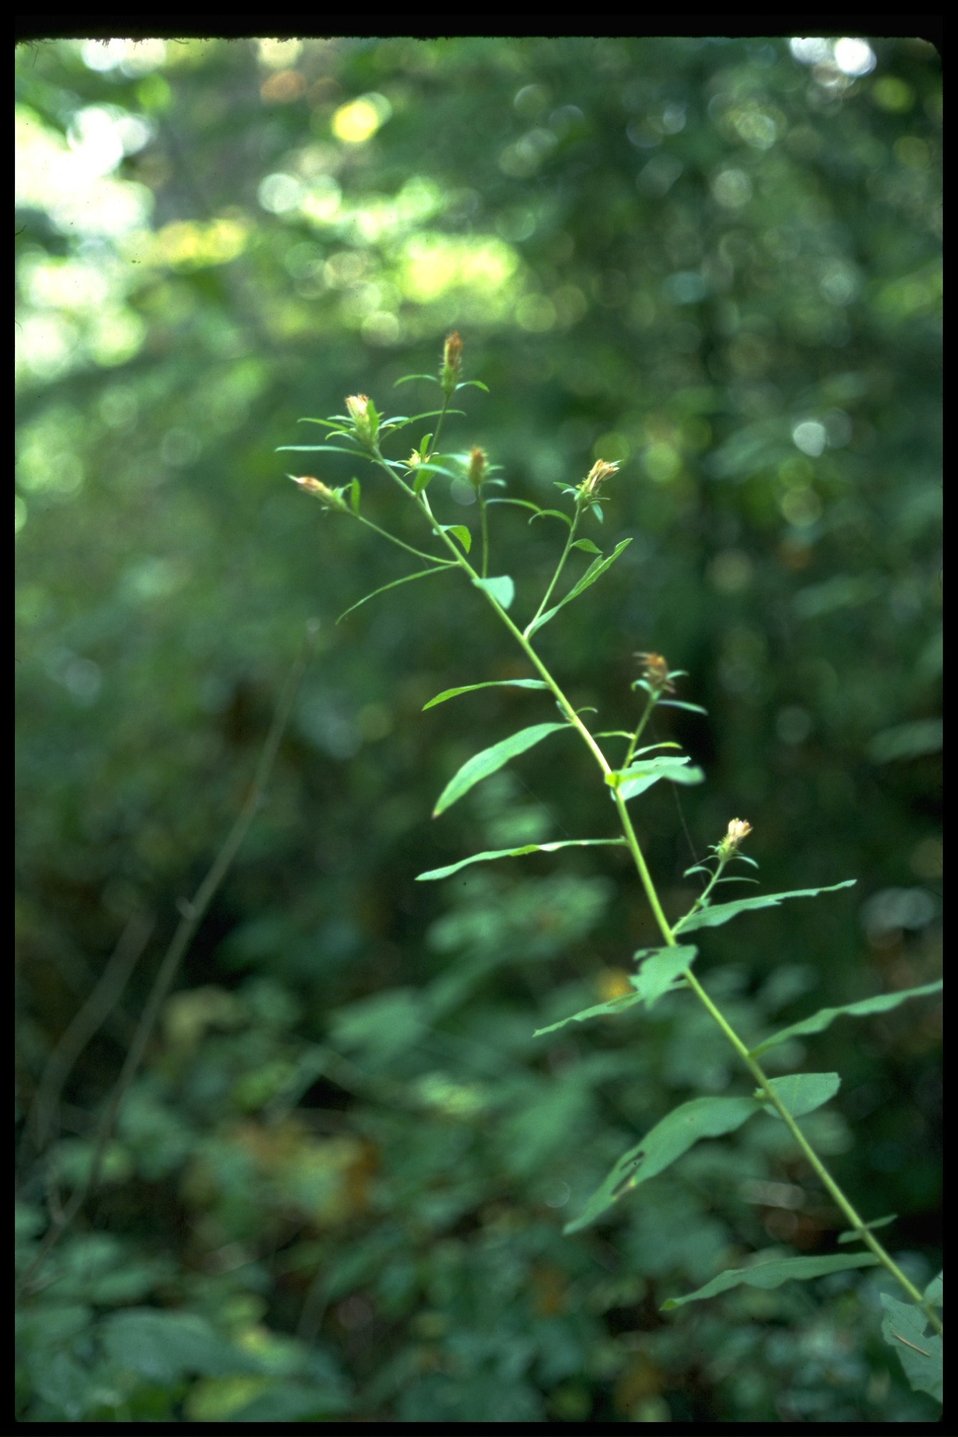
Medium shot of wayside aster (Aster vialis).